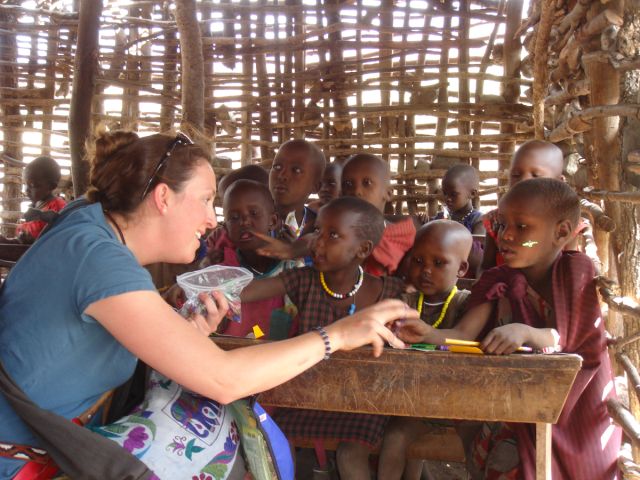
Team conquers mountain summit on quest

Capt. Nichelle Brokering hands out crayons, pencils and stickers to children of a Maasi village kindergarten school in Ngorongoro Crater National Park on July 19. It was Day 2 of the team's safari after the captain and fellow teammates successfully completed their climb of Mount Kilimanjaro. Captain Brokering is with the 351st Air Refueling Squadron at Royal Air Force Mildenhall, England.